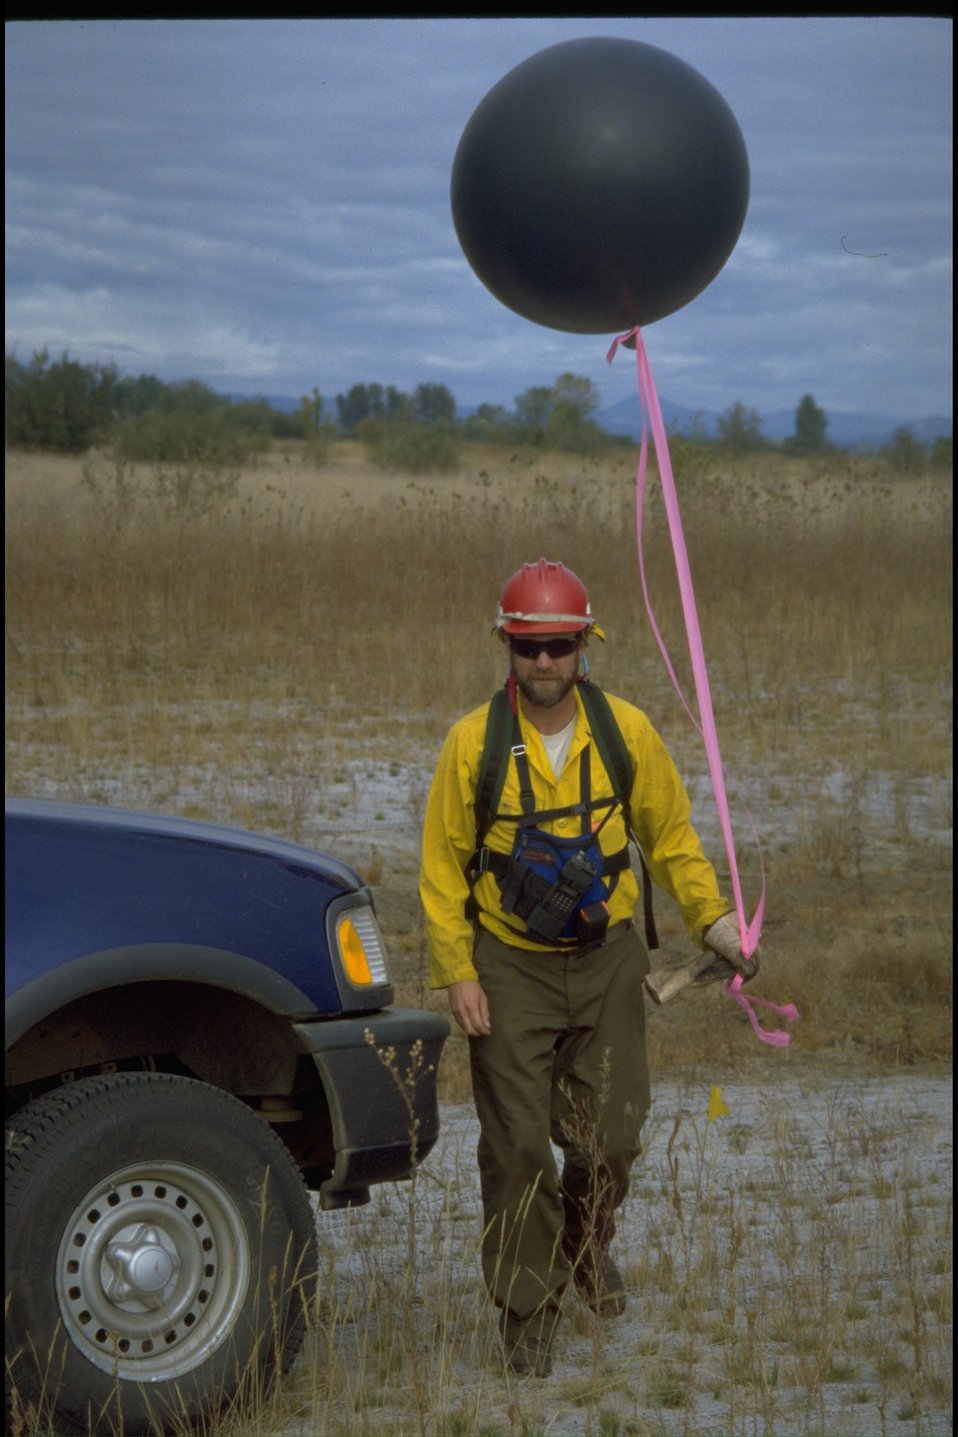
Spectra Physics burn - Wetlands (Dave Reed).